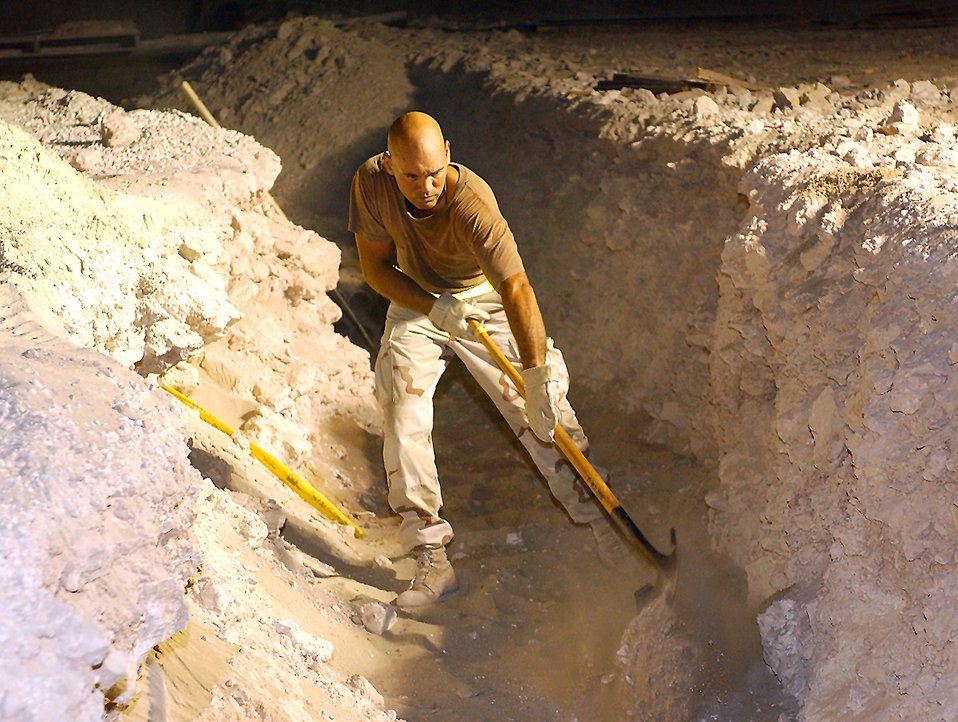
In the trenches

AL UDEID AIR BASE, Qatar (AFPN) -- Staff Sgt. Jason Renner clears a utility trench in the communications compound here. Renner is assigned to the base's 379th Engineering and Installation Squadron.